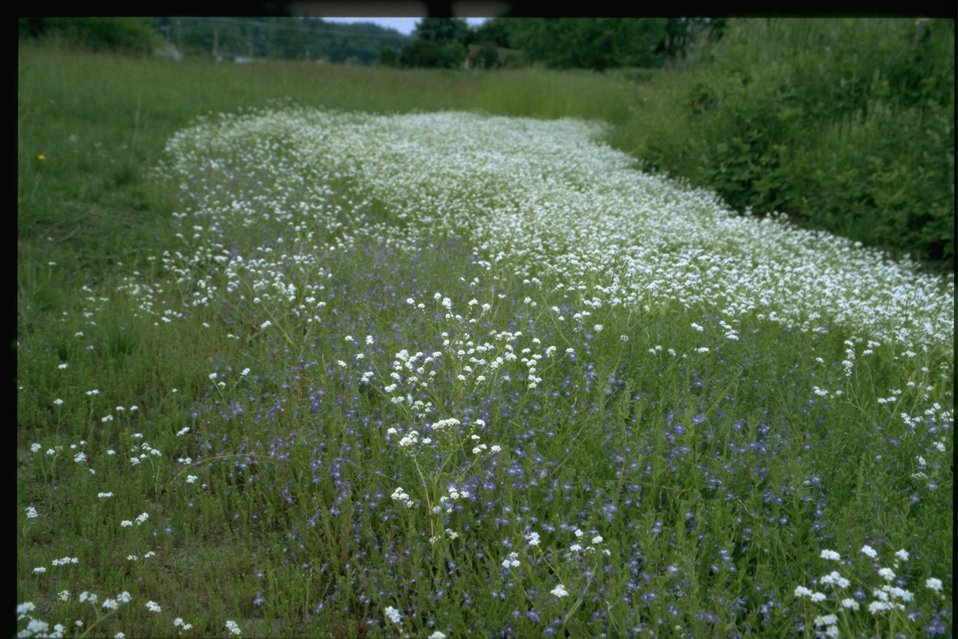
Far shot of Plagiobothrys figurantus.